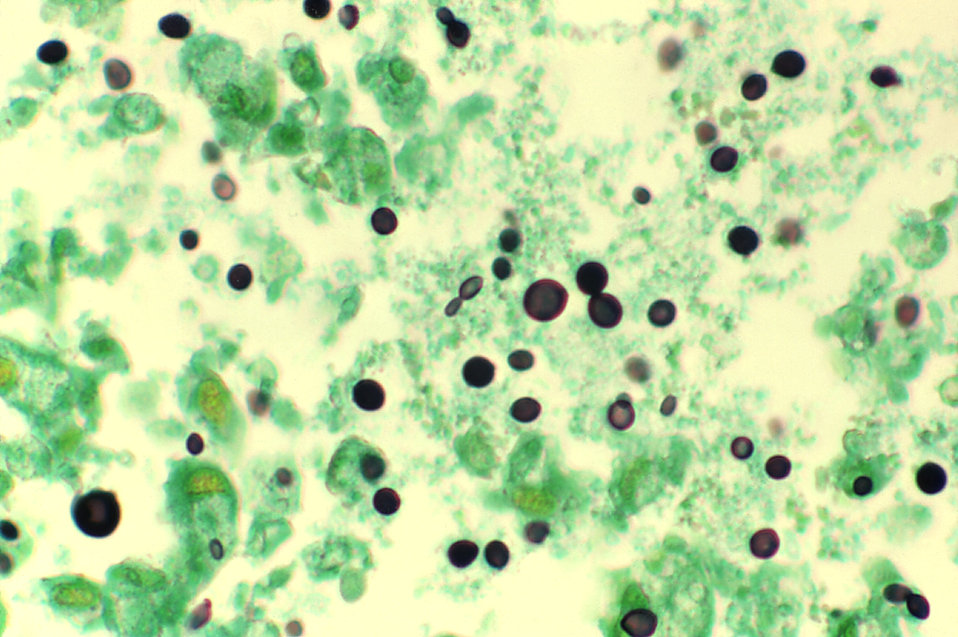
Cryptococcosis of lung in patient with AIDS. Methenamine silver stain.